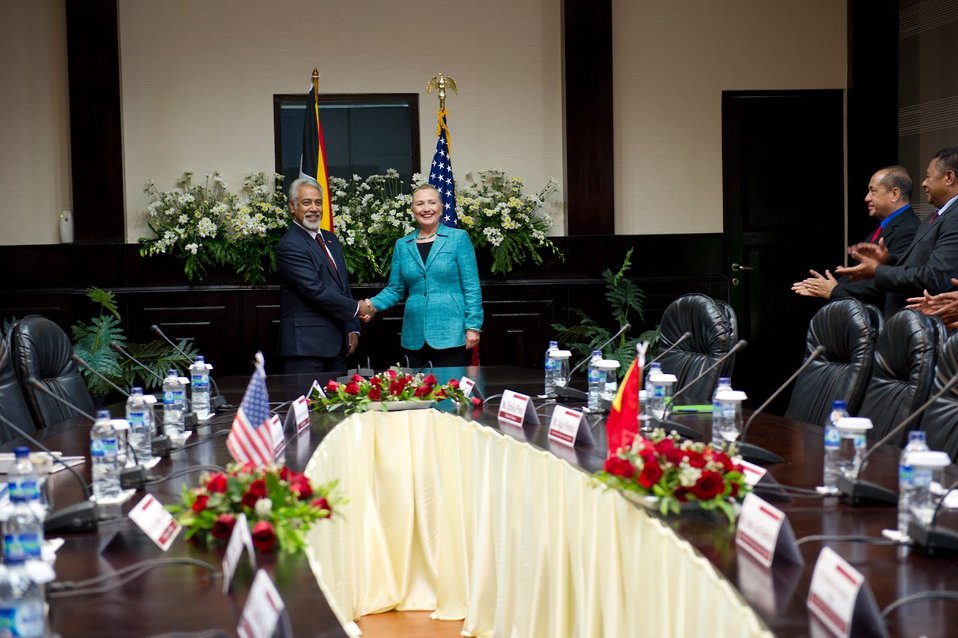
Secretary Clinton Shakes Hands With Timor-Leste's Prime Minister Gusmao

U.S. Secretary of State Hillary Clinton smiles with Timor-Leste’s Prime Minister Xanana Gusmao after their visit in the capital, Dili, September 6, 2012. The Secretary's visit to Asia's youngest democracy was the first time a U.S Secretary of State has visited the nation.